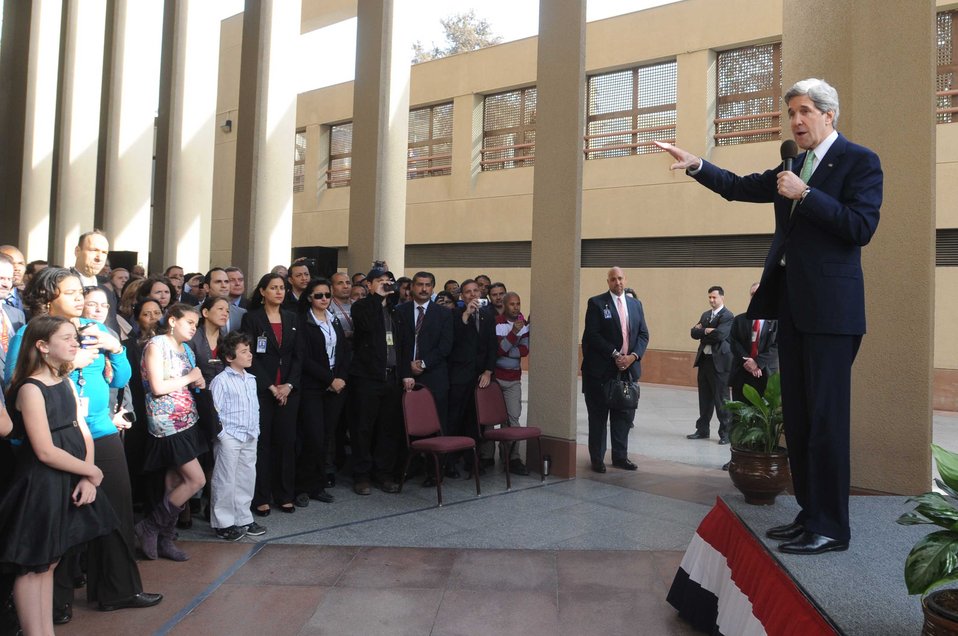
Secretary Kerry Delivers Remarks to Embassy Cairo Staff and Families

U.S. Secretary of State John Kerry deliver remarks to the staff and families of the U.S. Embassy in Cairo, Egypt, on March 3, 2013.